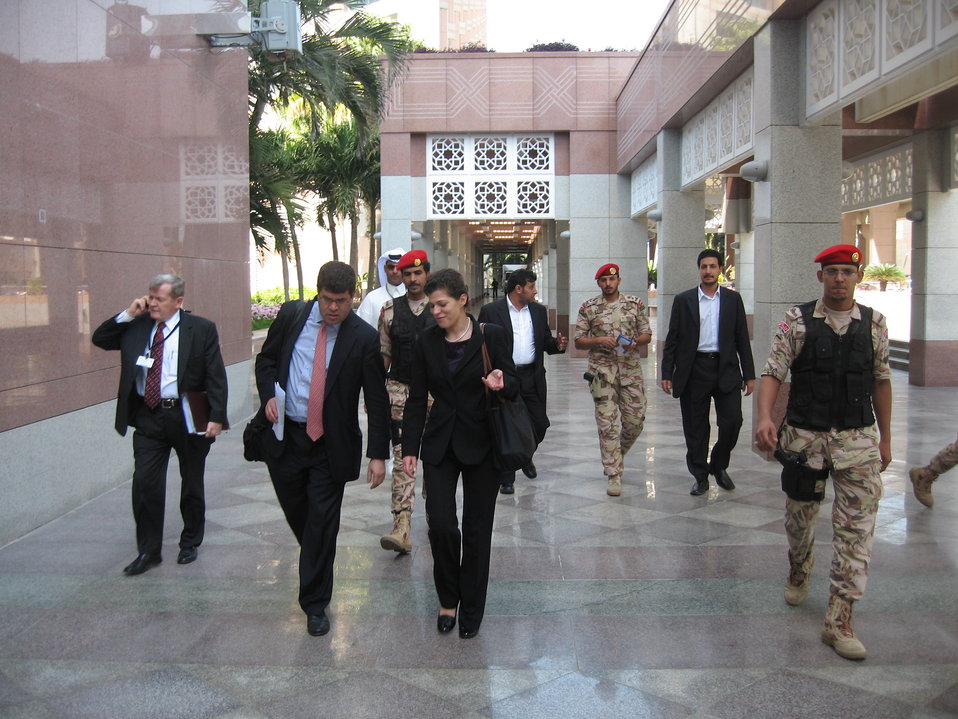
Deputy Secretary Wolin in Jeddah, Saudi Arabia.

Deputy Secretary Wolin before lunch at the Jeddah Economic Forum on Sunday, February 14 in Jeddah, Saudi Arabia.